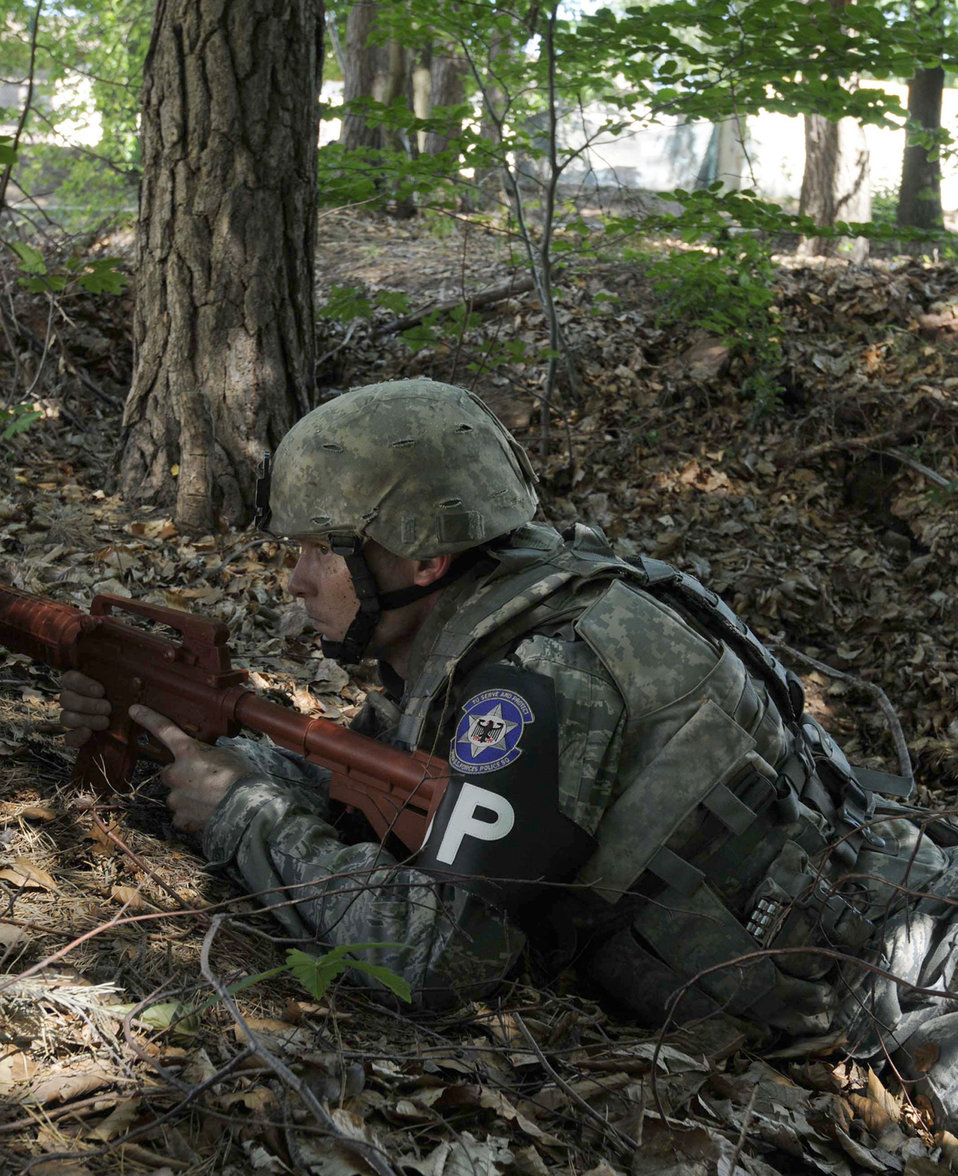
Got it covered

Staff Sgt. Jamie Barnett secures the area June 27, 2011, at Ramstein Air Base, Germany, during an active-shooter exercise. Barnett is assigned to the 569th U.S. Forces Police Squadron at Vogelweh AB, Germany.